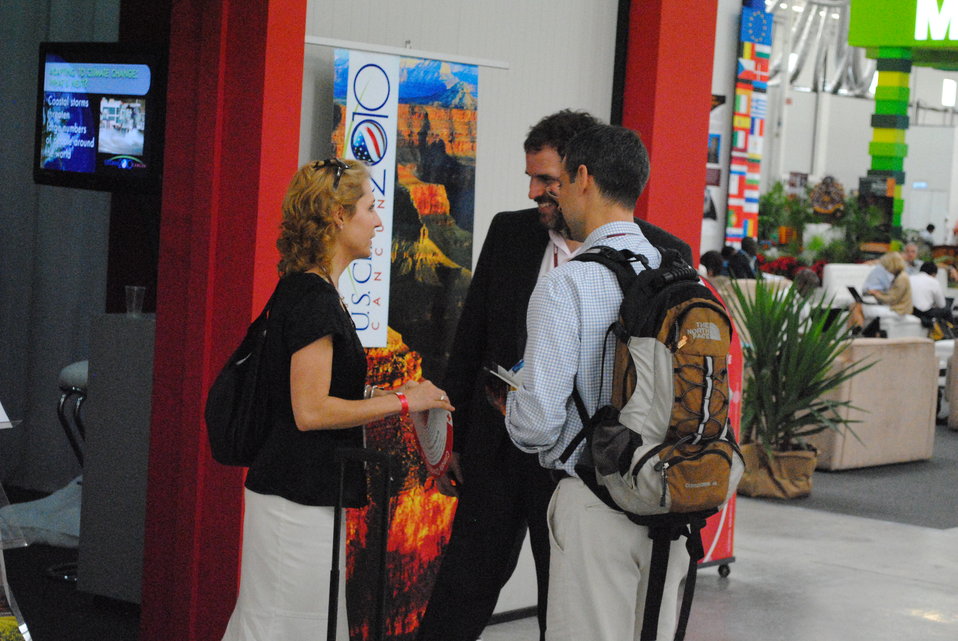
Rafael Ameller Speaks With Observers

Rafael Ameller, Chief Earth Scientist and Director of Technology, at Storm Center Communications, Inc., speaks with observers outside of the U.S. Center at COP-16 in Cancun, Mexico, on November 30, 2010.